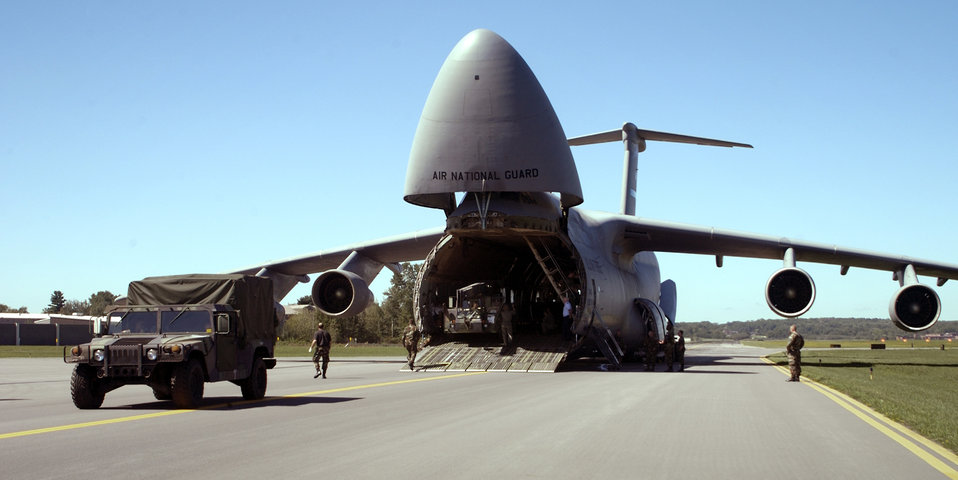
More relief on the way

ALBANY, N.Y. -- A scamp crane sits inside a C-5 Galaxy before a Humvee is loaded Sept. 5 by Airmen with the 109th Aerial Port Squadron at the Albany International Airport. The cargo was bound for Gulfport, Miss., in support of Hurricane Katrina relief operations. The Galaxy belongs to the New York Air National Guard's 105th Airlift Wing that has flown 12 missions delivering about 1.5 million pounds of cargo and 400 passengers in support of the relief effort.